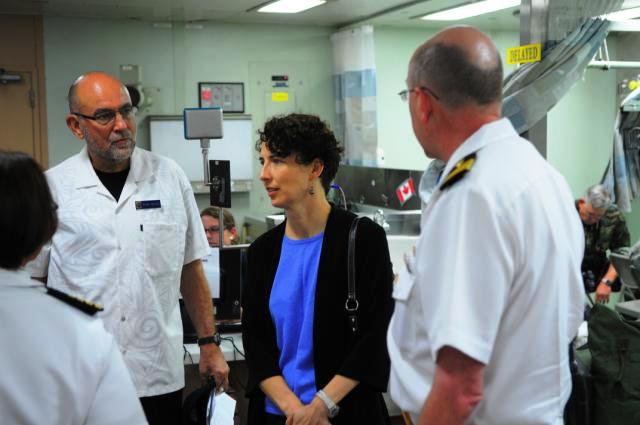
Consul General Bauer and FSO Weinz Tour the Surgical Department

U.S. Consul General Surabaya Kristen Bauer and U.S. Foreign Service Liaison Officer Tom Weinz tour the surgical department on USNS Mercy during Pacific Partnership 2010 on July 18, 2010.